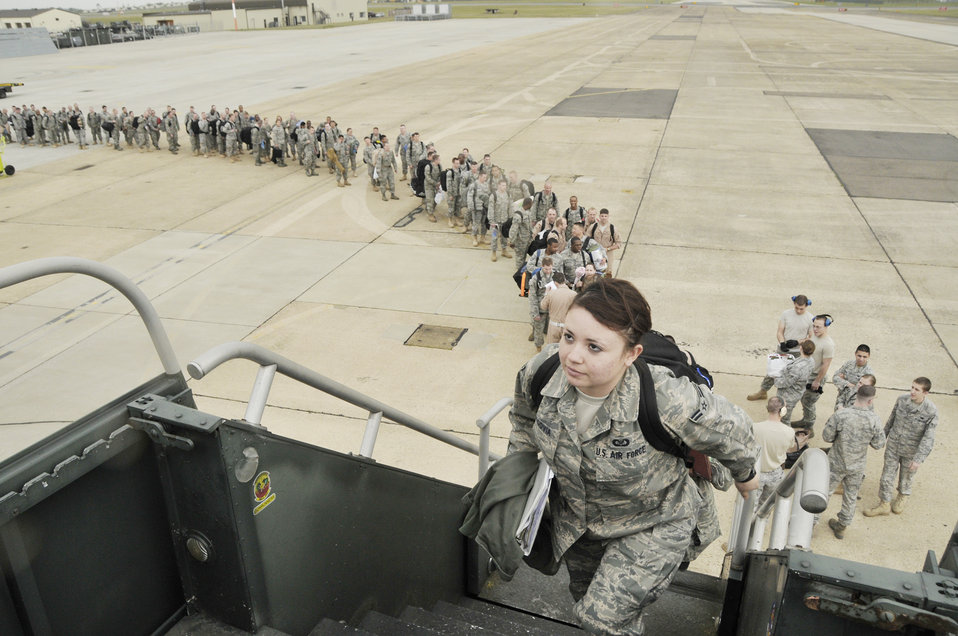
At the head of the line

Airman 1st Class Claudia Segovia boards a Boeing 737 en route to Bagram Airfield, Afghanistan, in support of Operation Enduring Freedom. Airman Segovia is assigned to the 492nd Fighter Squadron at Royal Air Force Lakenheath, England.